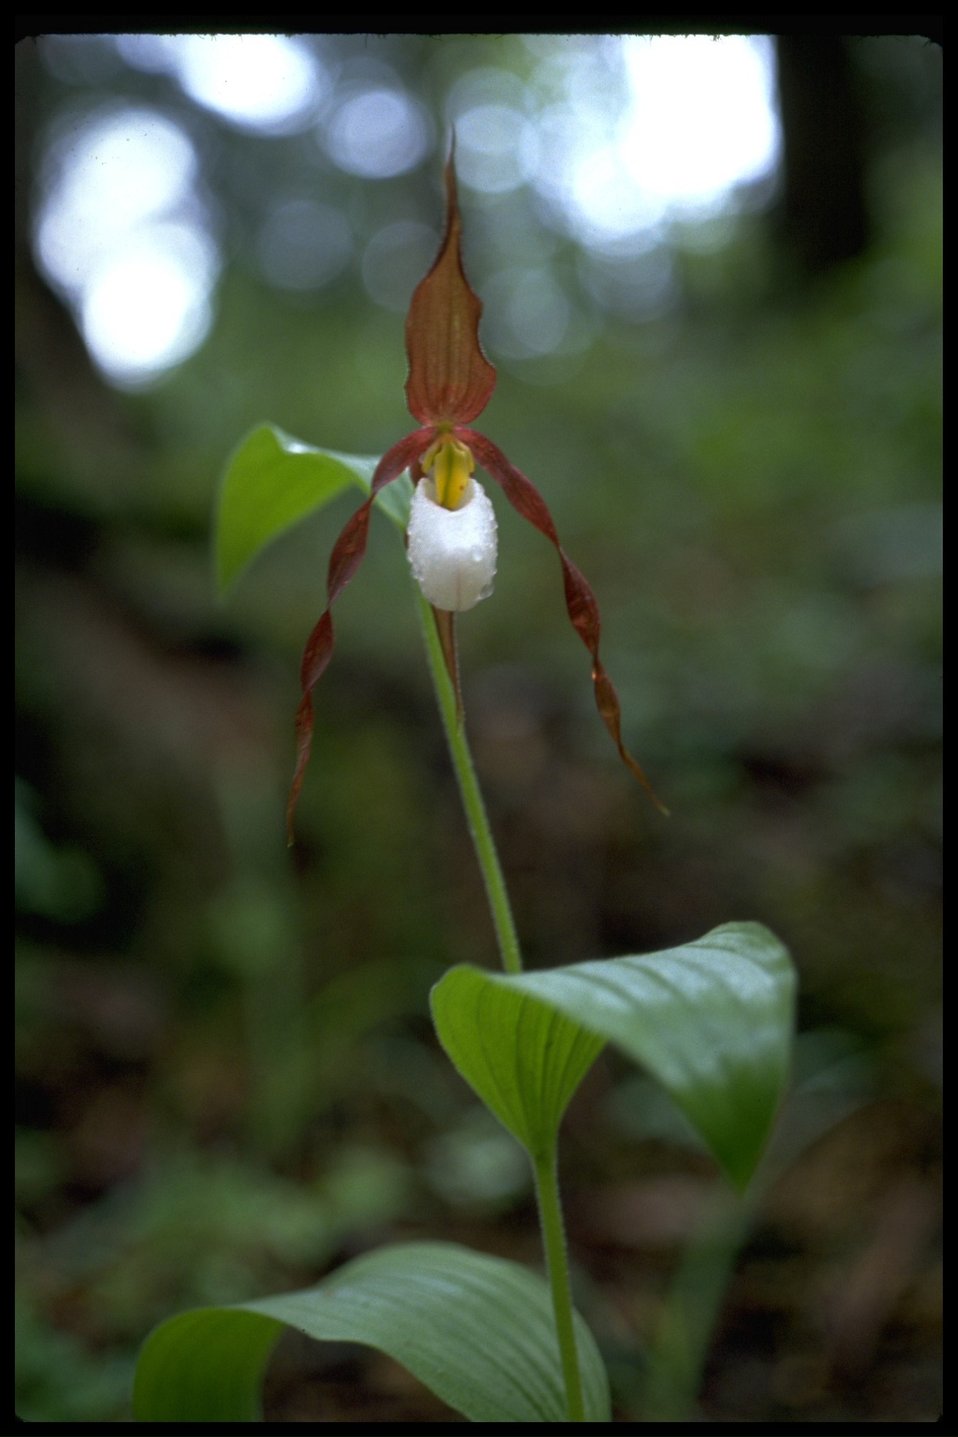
Medium shot of mountain lady's slipper (Cypripedium montanum).